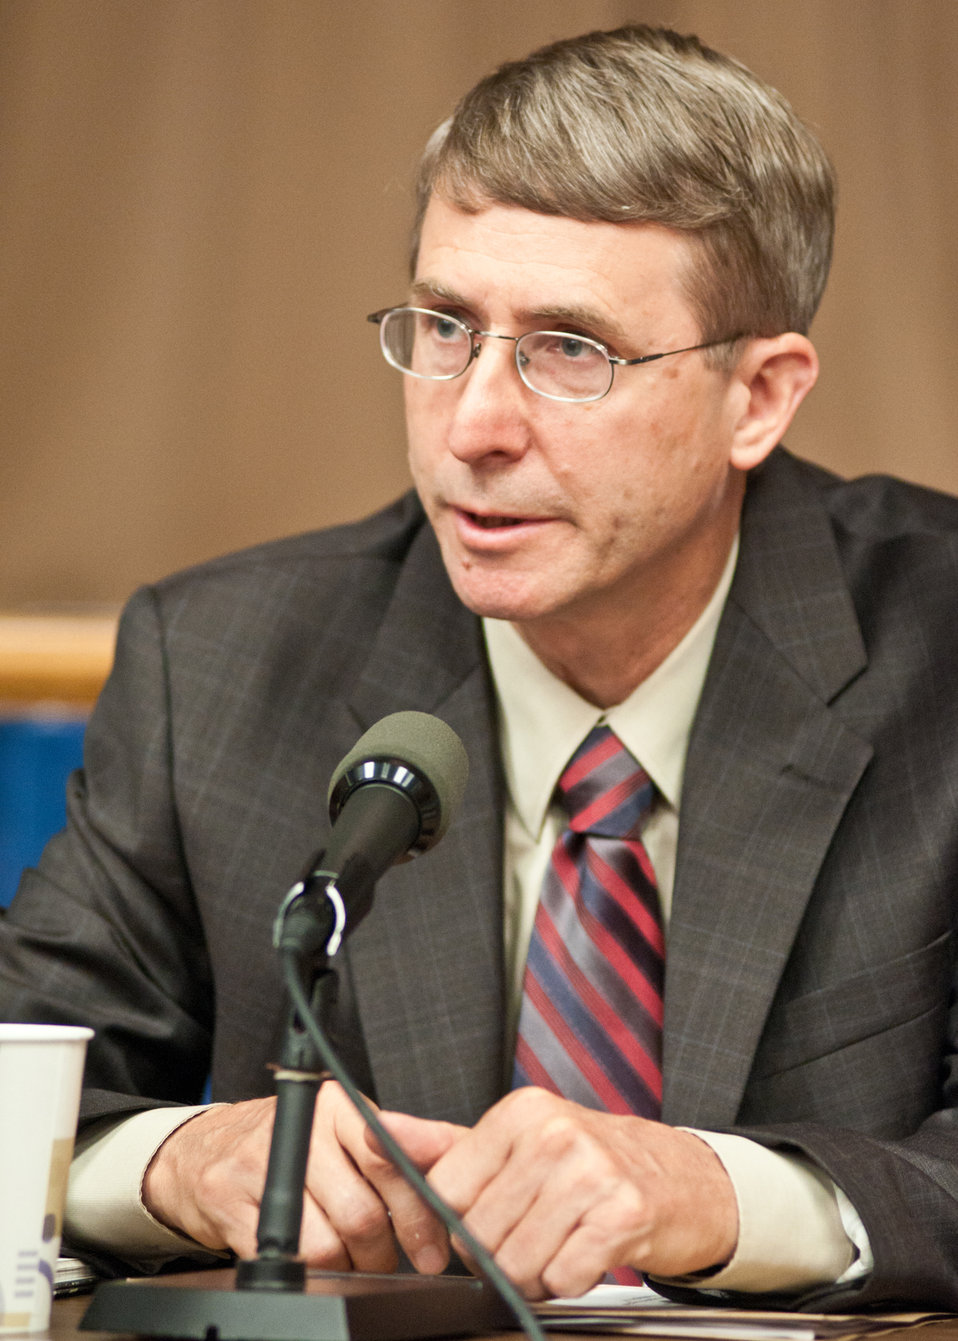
Miles McEvoy, Deputy Administrator, National Organic Program addresses stakeholders and members of the public during the USDA Activities and Priorities Related to Organic Agriculture and Markets Public Listening Session held at the U.S. Department of Agriculture, in Washington DC, Tuesday, September 20, 2011. The purpose of the event was to gain the perspective of stakeholders and members of the public, important tools to help USDA Programs examine and prioritize their activities and objectives in order to best serve the organic community.